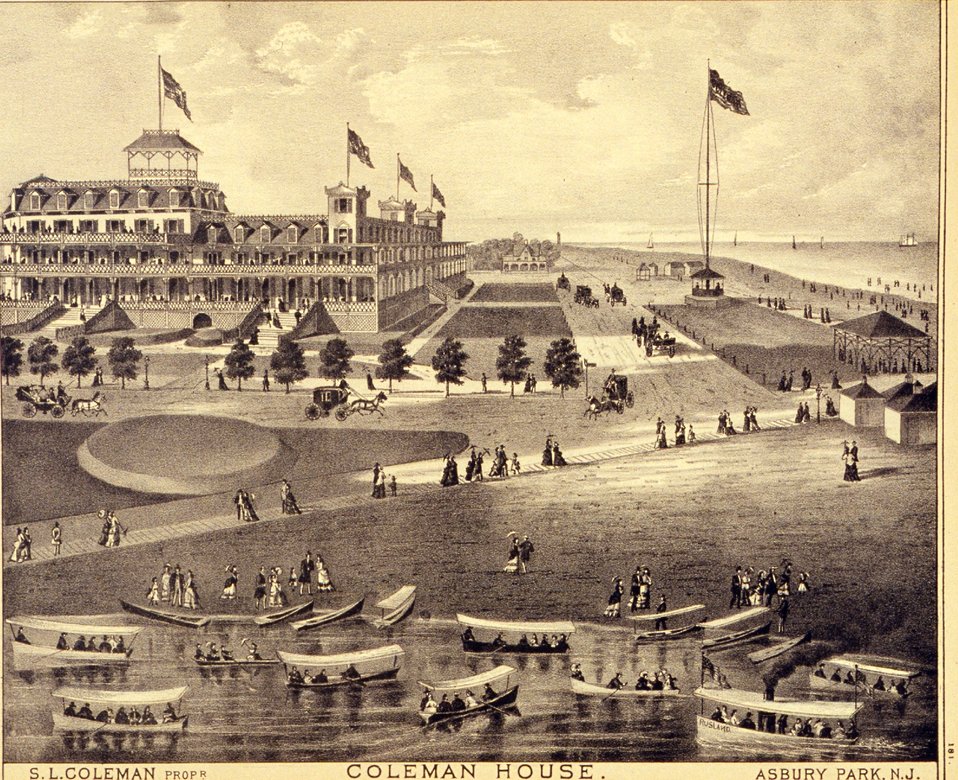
Coleman House, Asbury Park, New Jersey. P. 181. 'Historical and Biographical Atlas of the New Jersey Coast,' by T. F. Rose, 1878.